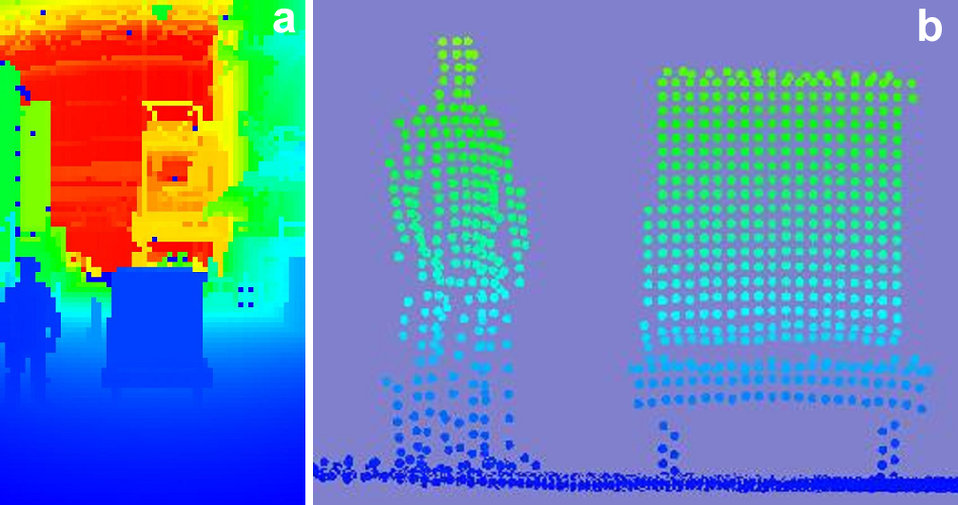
Manufacturing; Robotics

(a) Simulation of pseudo-color coded image showing man (left) and pallet (right) where blue indicates objects near the AGV and red indicates things far away.
(b) The corresponding 3-D point cloud view of the man and pallet. Points seen are less than 3 meters away and lower than 10 meters in height from the sensor.